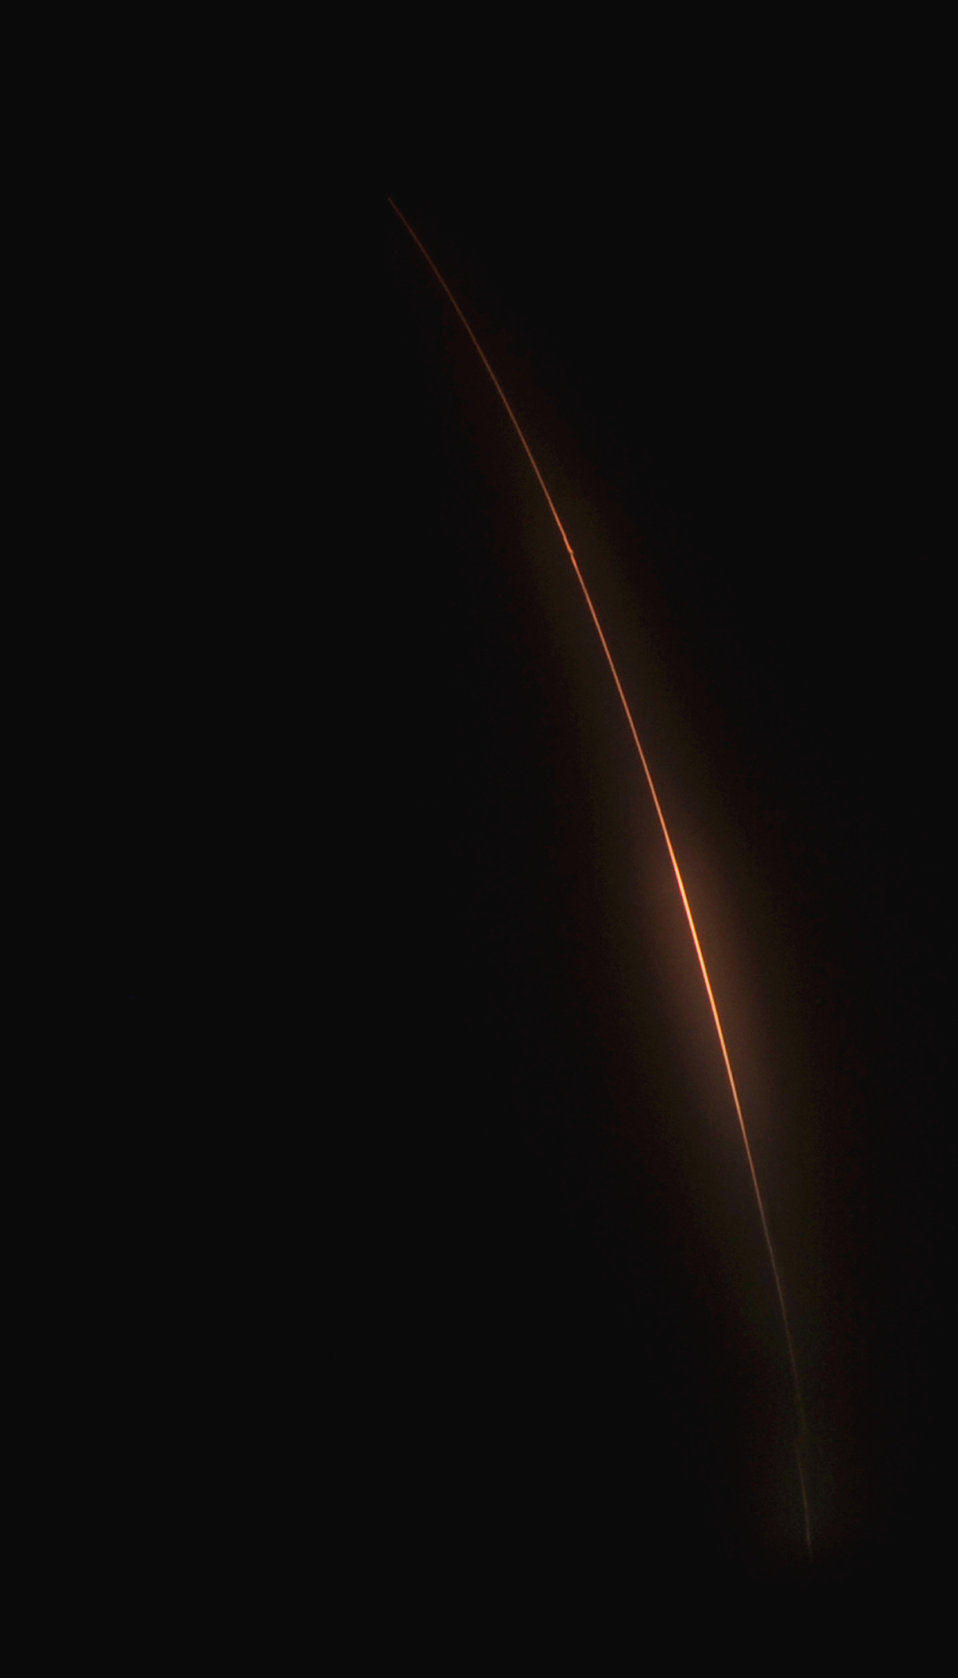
Vandenberg Airmen conduct Minuteman III flight test

A scheduled unarmed operational test Minuteman III intercontinental ballistic missile launch occurred Sept. 17, 2010, from Launch Facility-09 at Vandenberg Air Force Base, Calif. The missile's single reentry test vehicle traveled approximately 5,300 miles to a pre-determined target about 200 miles southwest of Guam. ICBM analysts, including officials from the Department of Defense and the Department of Energy, will use the data collected to ensure the readiness and capability of the ICBM fleet.